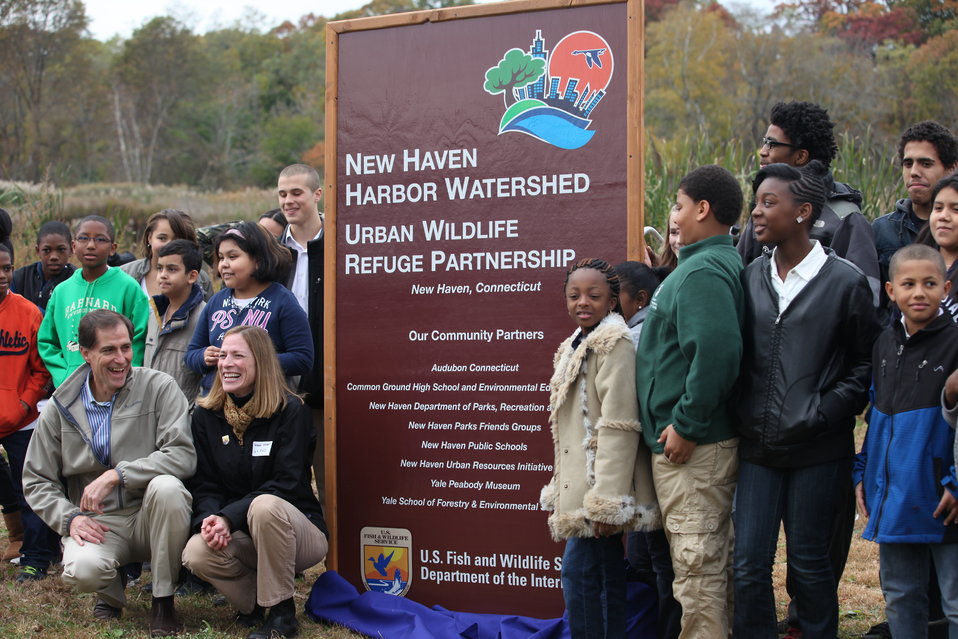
Designating the New Haven partnership

U.S. Fish and Wildlife Service Director Dan Ashe and Northeast Regional Director Wendi Weber unveil the designation sign with students from Common Ground High School and Barnard Environmental Studies Magnet School.